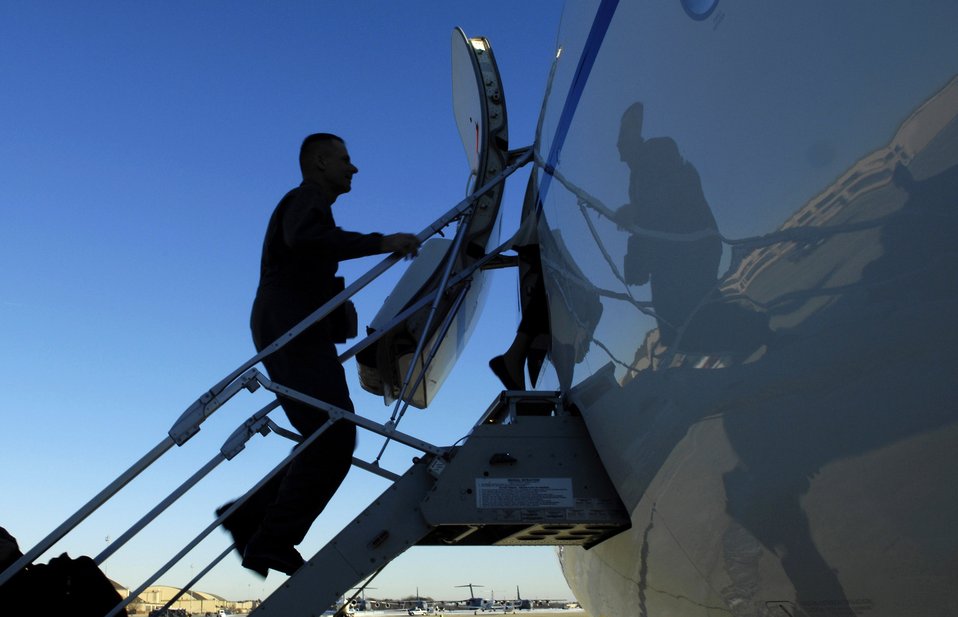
General Pace visits Hawaii

Gen. Peter Pace, chairman of the Joint Chiefs of Staff, boards a C-40 aircraft at Andrews Air Force Base, Md., on Feb. 8 to begin his visit to the Pacific region.